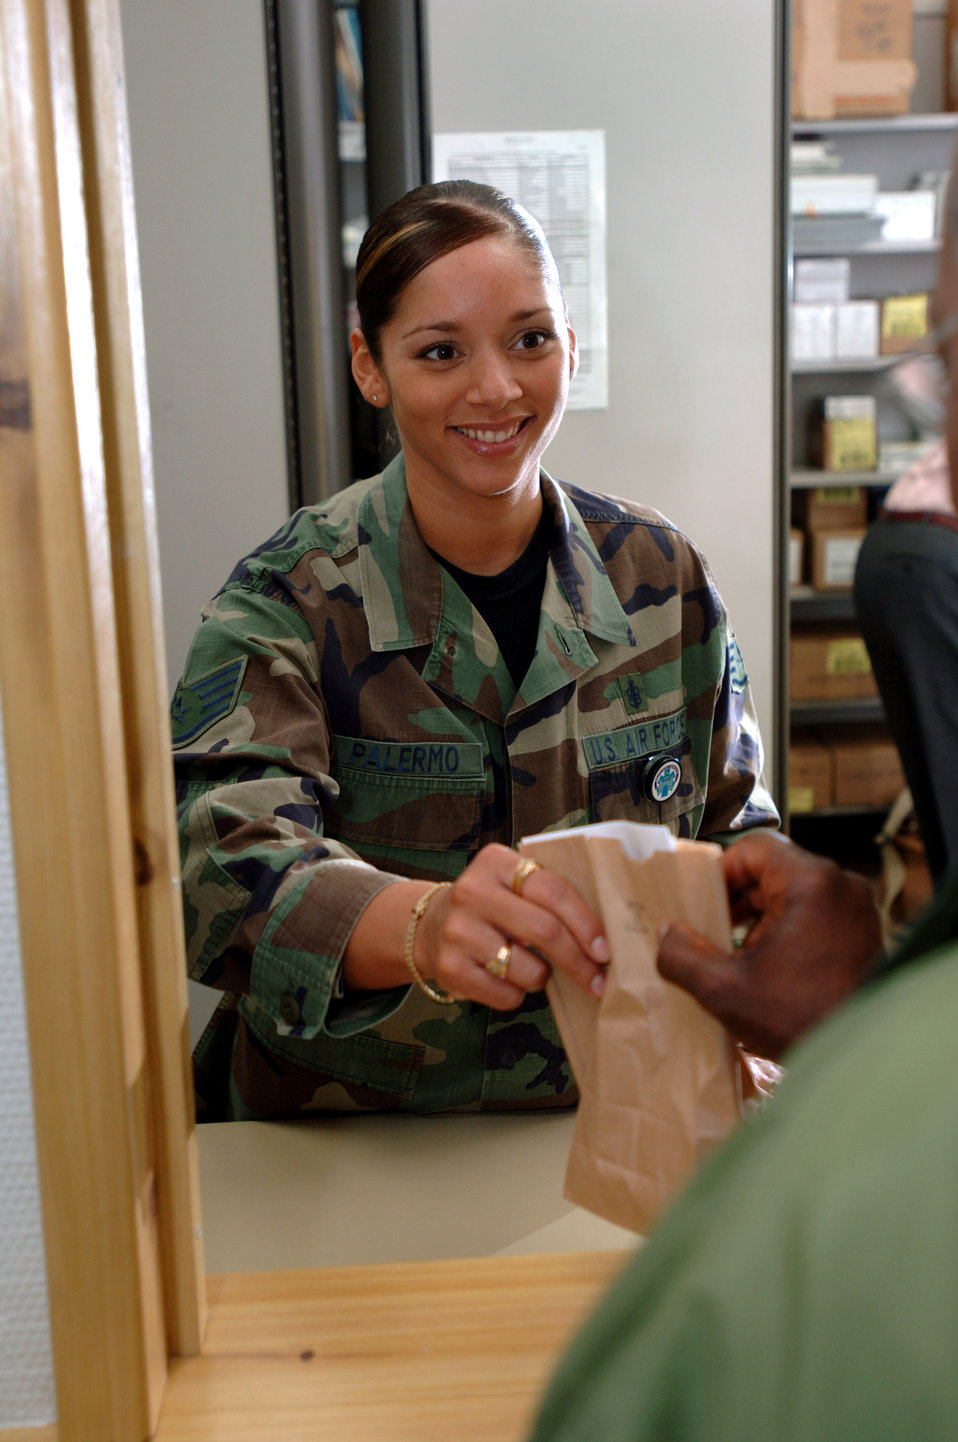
Army clinic's lone Airman manages pharmacy

Staff Sgt. Guanina Palermo hands prescription medicine to a patient from the pharmacy window at the health clinic on Kleber Kaserne, Germany, on Wednesday, April 26, 2006. Sergeant Palermo, from Liverpool, N.Y., is a pharmacy technician and only Airman working with the health clinic on the Army post near Kaiserslautern.